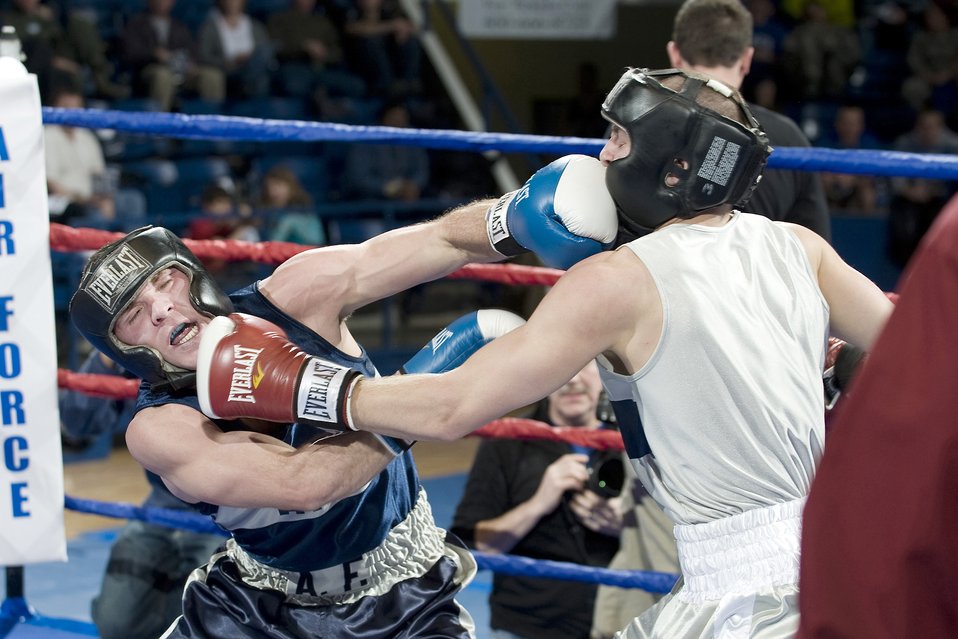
Academy Open Boxing Championship

Junior Joe Silvio and sophmore Tyrus Korecki mix it up during the 156-pound open championship bout at the U.S. Air Force Academy's Clune Arena in Colorado March 5, 2010. Silva went on to win the contest by decision.